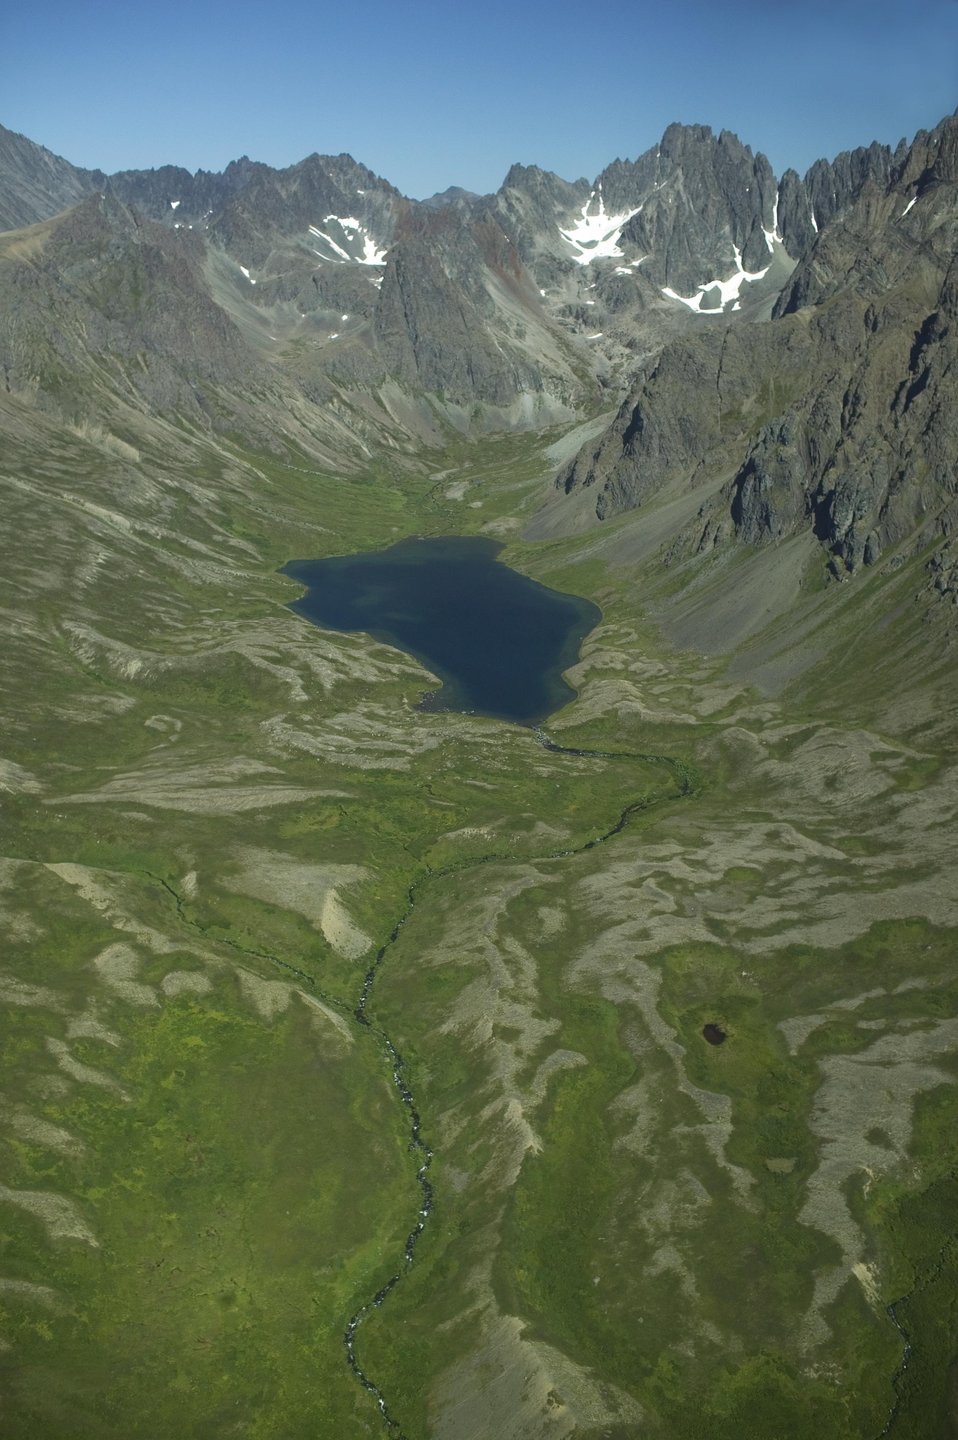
Togiak Nation Wildlife Refuge